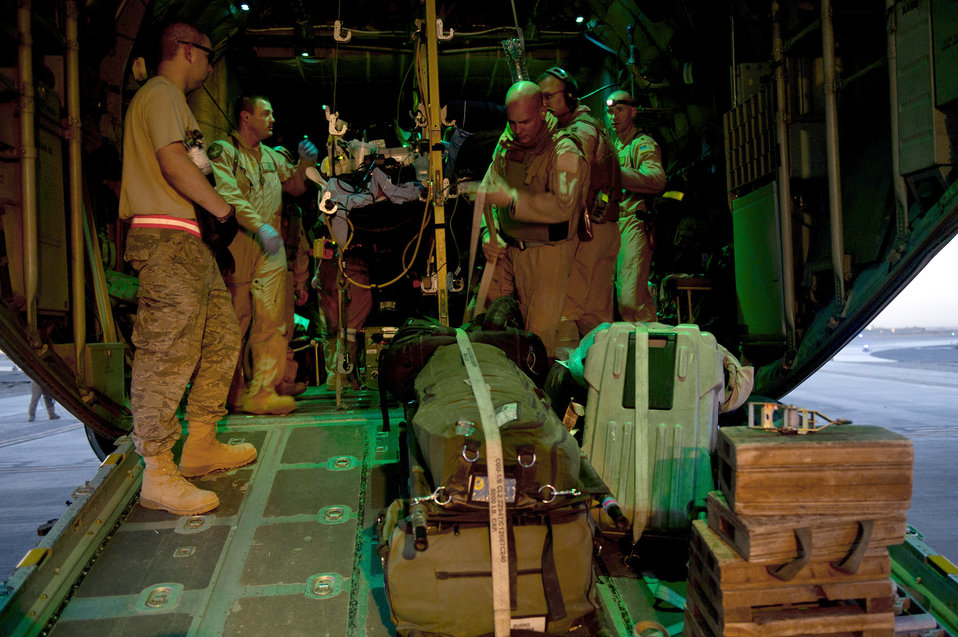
451st Expeditionary Aeromedical Evac Squadron Detachment 1 Contingency Aeromedical Staging Facility

Members from the 451st Expeditionary Aeromedical Evacuation Squadron, Detachment 1, help secure wounded Marines, their baggage and medical equipment onto a C-130 Hercules on May 23, 2011, at Camp Bastion, Afghanistan. The CASF team is responsible for taking care of and transporting patients from the staging facility and role hospital to aircraft for transport to the next level of medical care.